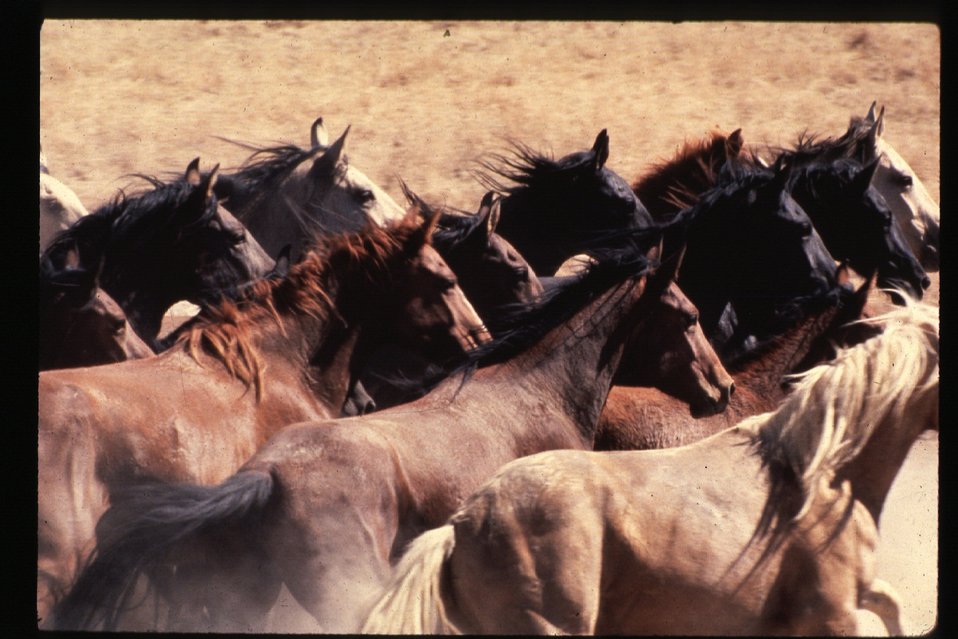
Wild Horse and Burro Adoption Program Vale District Oregon